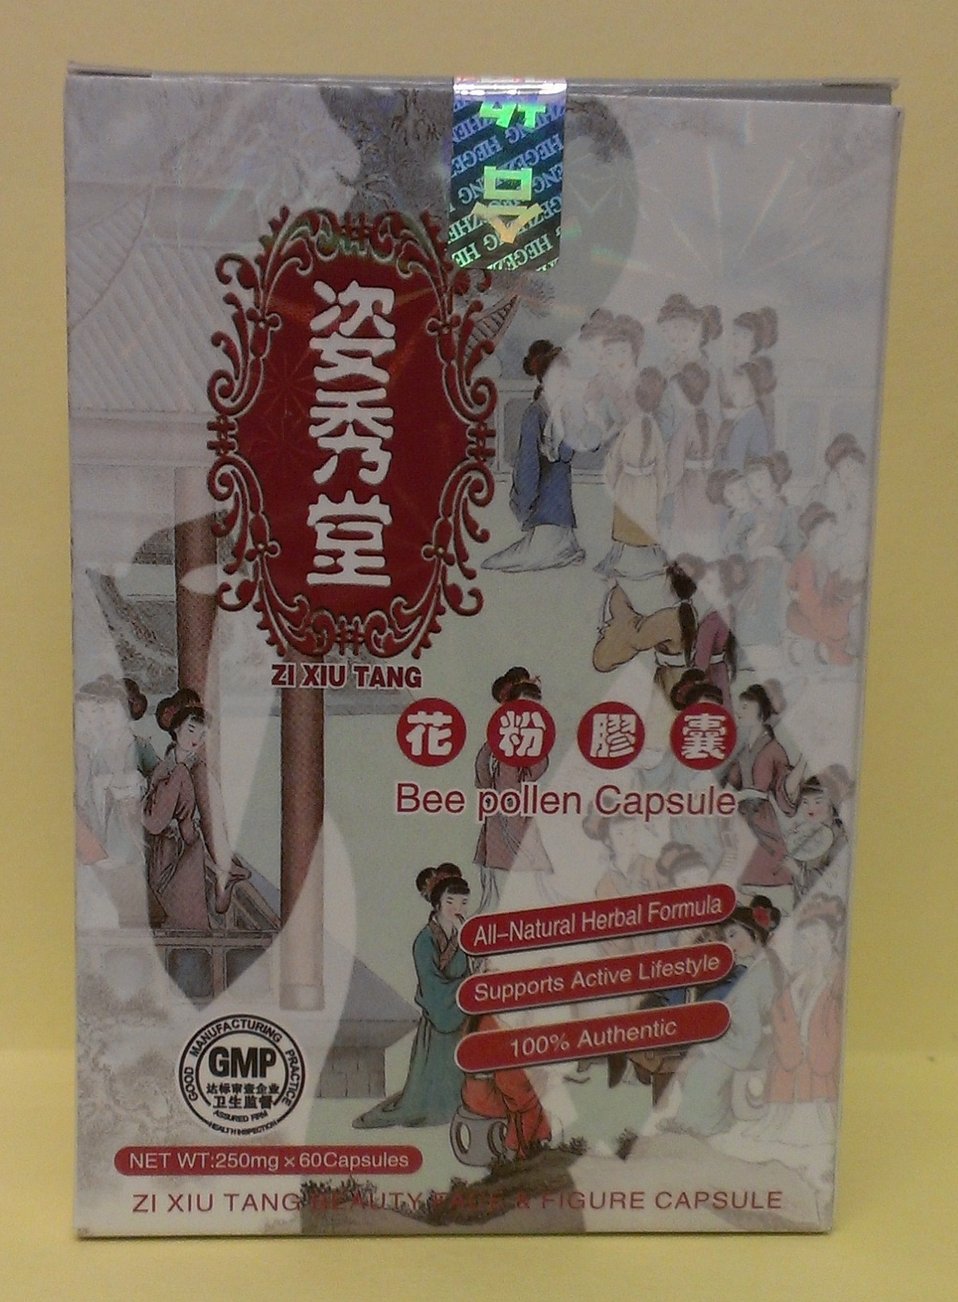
Zi Xiu Tang Bee Pollen

October 24, 2012 - The FDA is advising consumers not to purchase or use 'Zi Xiu Tang Bee Pollen,' a product promoted and sold for weight loss. The product was found to contain undeclared sibutramine. For more information, go to www.fda.gov/Safety/Recalls/ucm326267.htm

And read this Consumer Update: Beware of Fraudulent ‘Dietary Supplements’